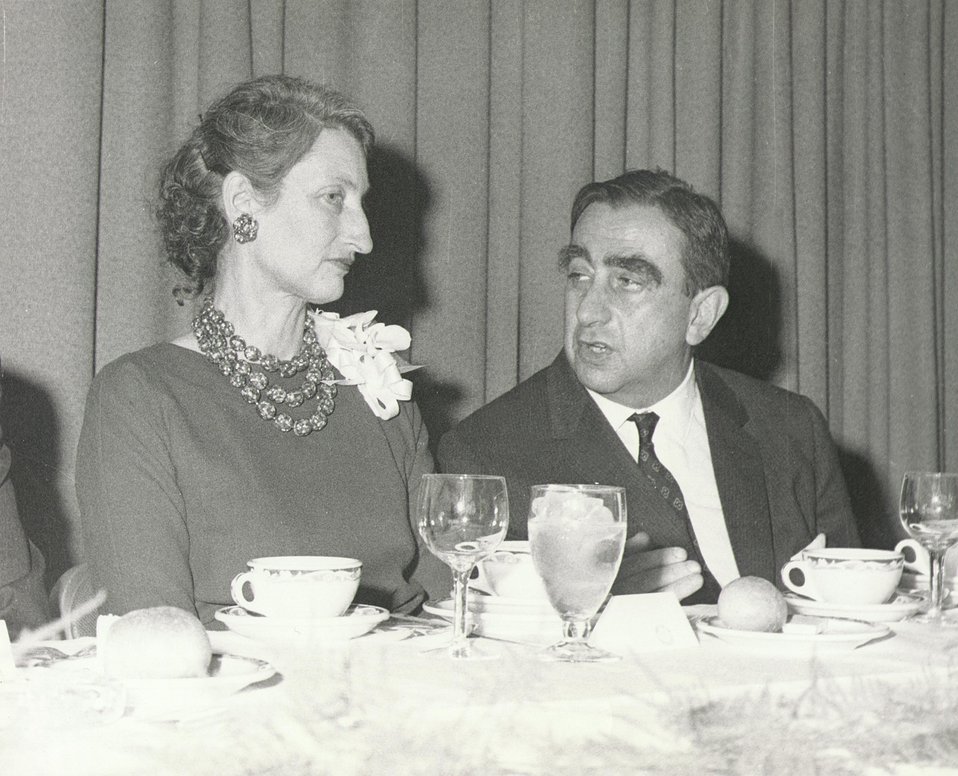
Fermi Award Ceremony for Teller in 1962. L to R- Ms. Glenn Seaborg and Dr. Teller.